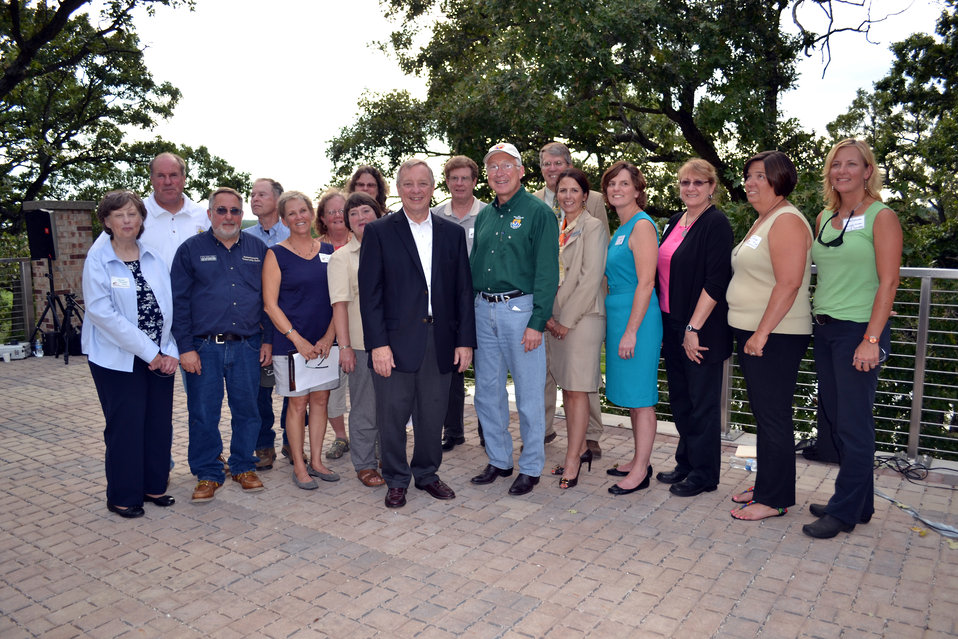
Pioneers

Early supporters and planners gathered to celebrate Secretary Salazar's announcement.